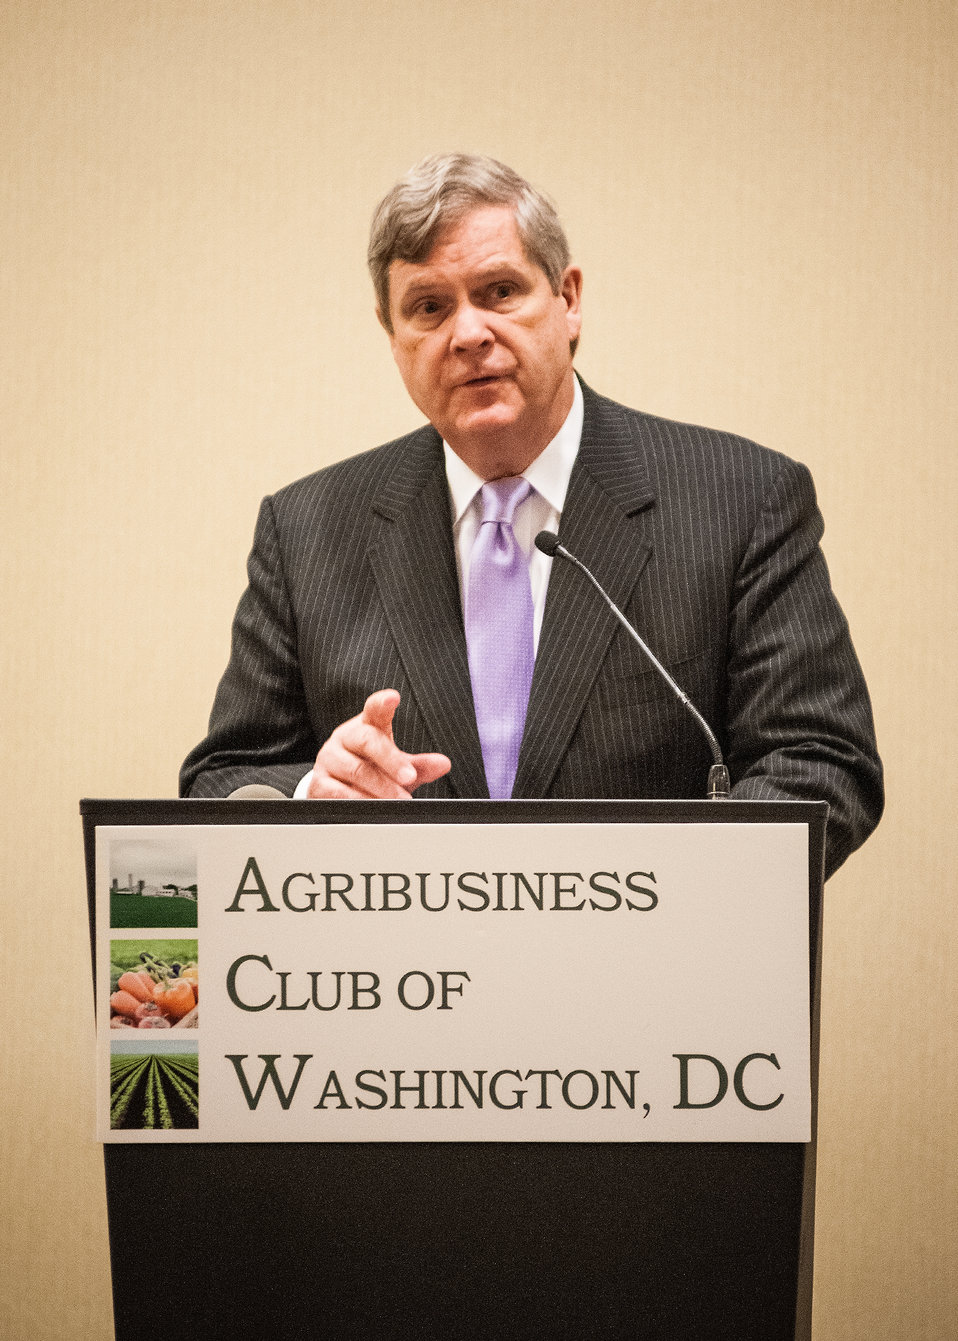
Agriculture Secretary Tom Vilsack spoke to the Agribusiness Club of Washington, D.C. on National Agriculture Day, Tuesday, Mar. 19, 2013. Secretary Vilsack discussed his four cornerstone priorities for the new rural economy – with special focus on building new markets for production agriculture and local/regional marketing of food.